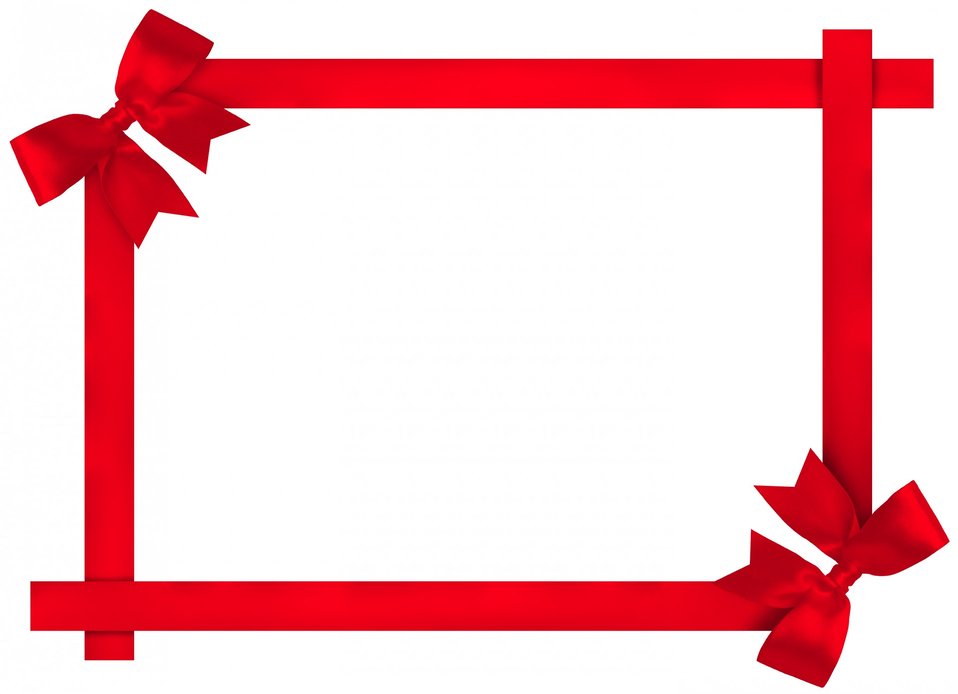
Frame of red bows

Frame with red bows on white background.